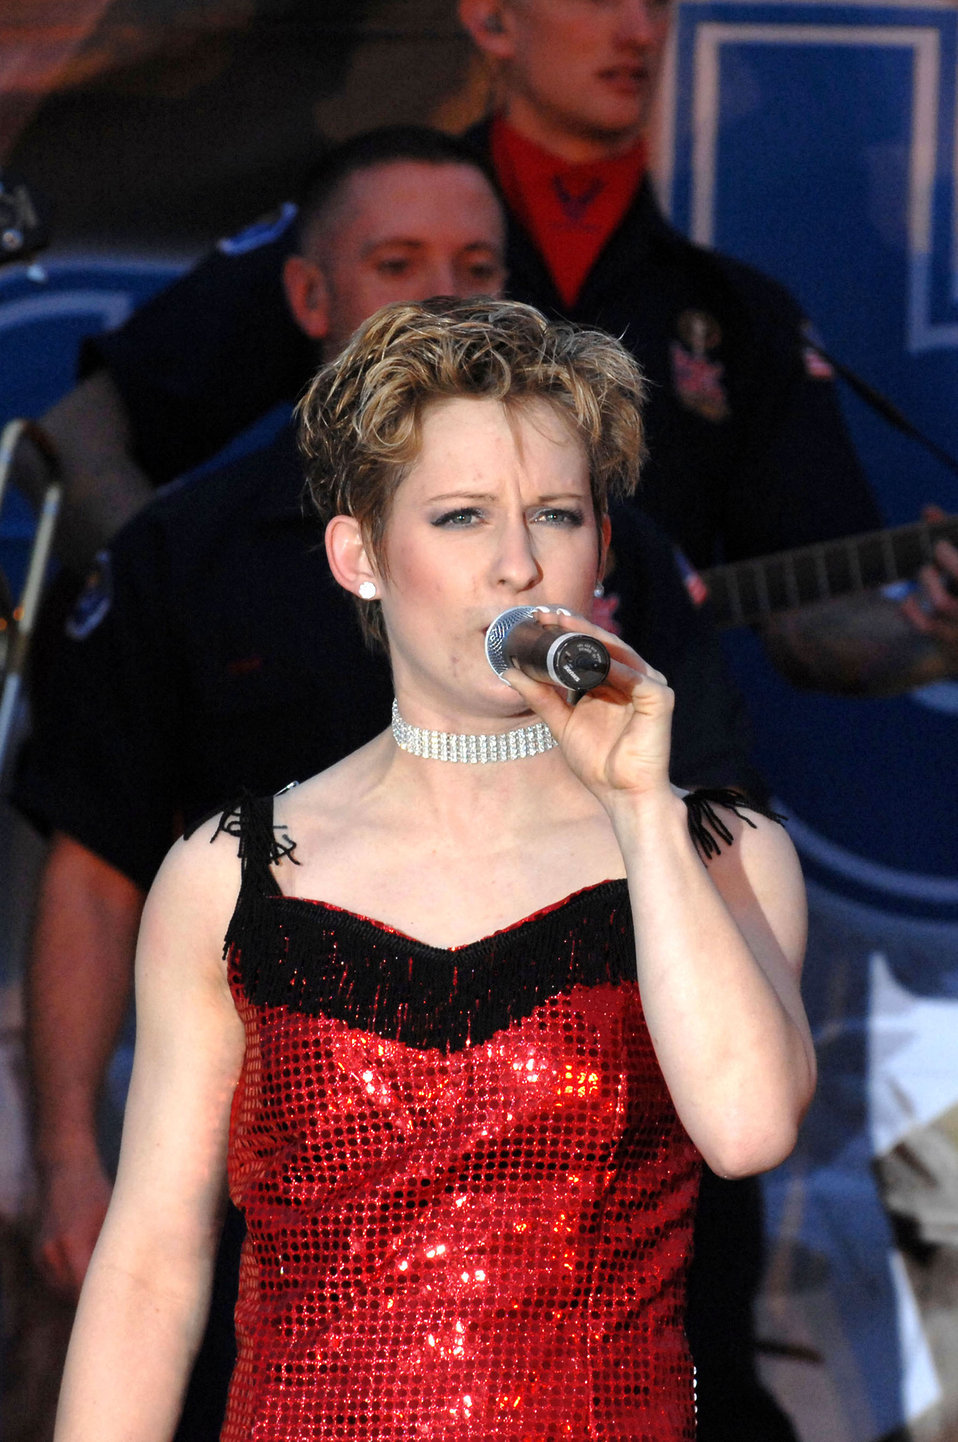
Tops in Blue perform for Airmen in Iraq

Tops in Blue Airmen sings to Airmen and Soldiers April 26 at Kirkuk Air Base, Iraq. The 30-member group's goal is to enhance mission productivity for Air Force members around the world. Tops in Blue showcases music, dance and comedy -- all performed by active-duty Airmen who perform 90 minutes of non-stop live entertainment.